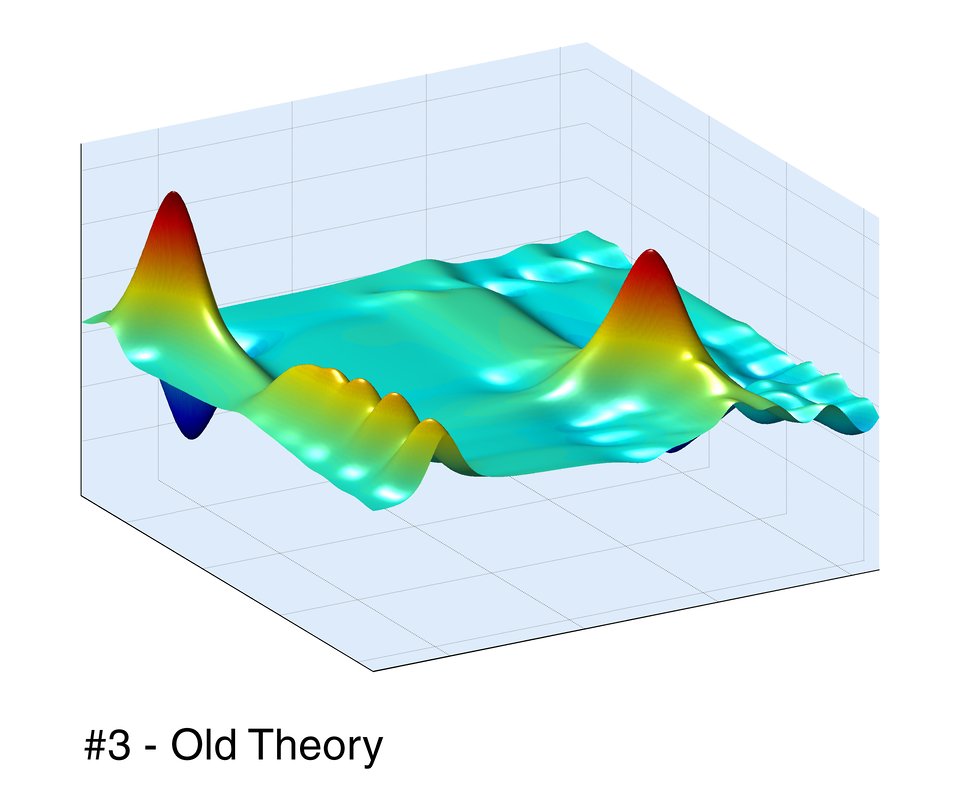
Semiconductors, selective behavior

Physicists at JILA have confirmed subtle 'collective behavior' among electronic structures in semiconductors, research that may help improve the design of optoelectronic devices.